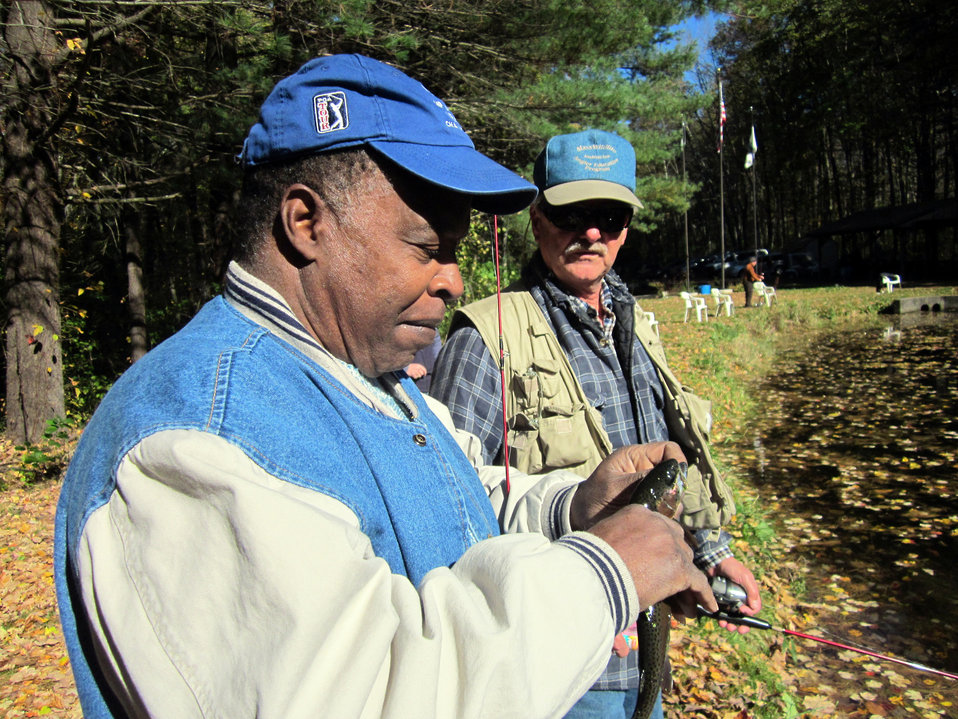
A helping hand

October 13, 2012, Sunderland, MA: Volunteer Mike Lamontagne (background) comes to the aid of veteran Terry Henry who has just caught one of many trout he caught from a pond at the U.S. Fish and Wildlife Service's Richard Cronin National Salmon Station.